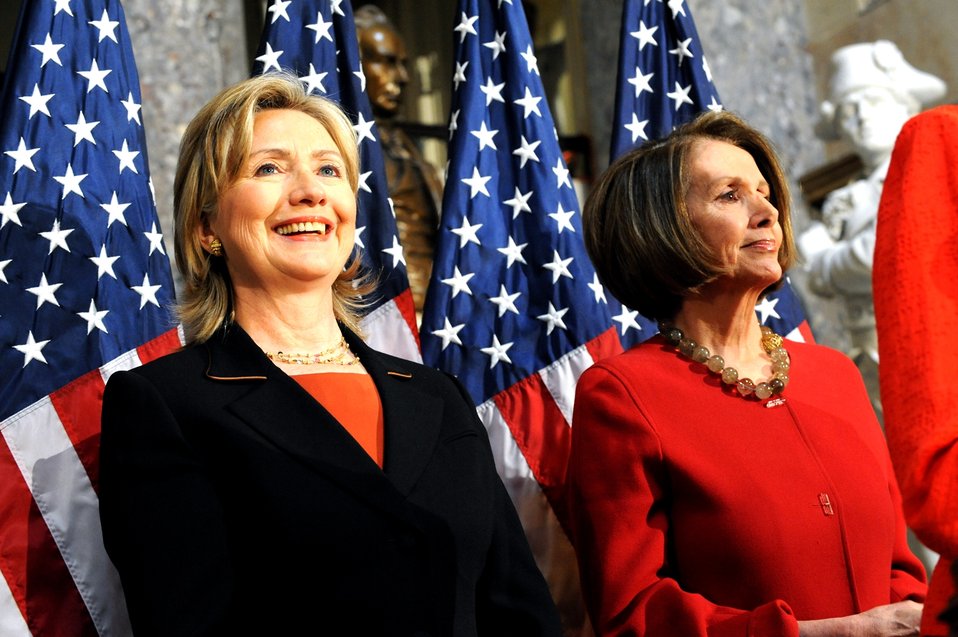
Secretary Clinton With House Speaker Nancy Pelosi

U.S. Secretary of State Hillary Rodham Clinton stands with House Speaker Nancy Pelosi at the celebration of the 30th Anniversary of the Women's History Project, where she was honored at the Statuary Hall, U.S. Capitol, Washington, D.C., March 25, 2010.